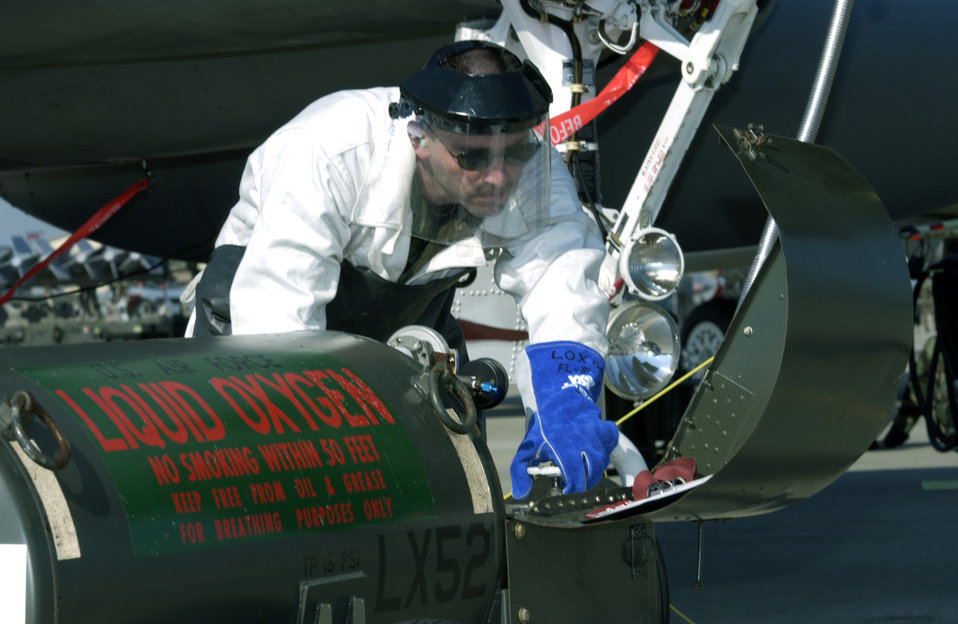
William Tell 2004

TYNDALL AIR FORCE BASE, Fla. -- Tech. Sgt. Randall Stone opens a valve to begin refueling an F-15 Eagle with liquid oxygen during William Tell 2004 here recently. This is the 50th anniversary of the William Tell competition, which tests an aircrew's ability to perform under combat conditions. The two-week competition will challenge pilots, weapons loaders and maintainers from five F-15 fighter wings. Sergeant Stone is assigned to the Oregon Air National Guard's 142nd Maintenance Squadron.